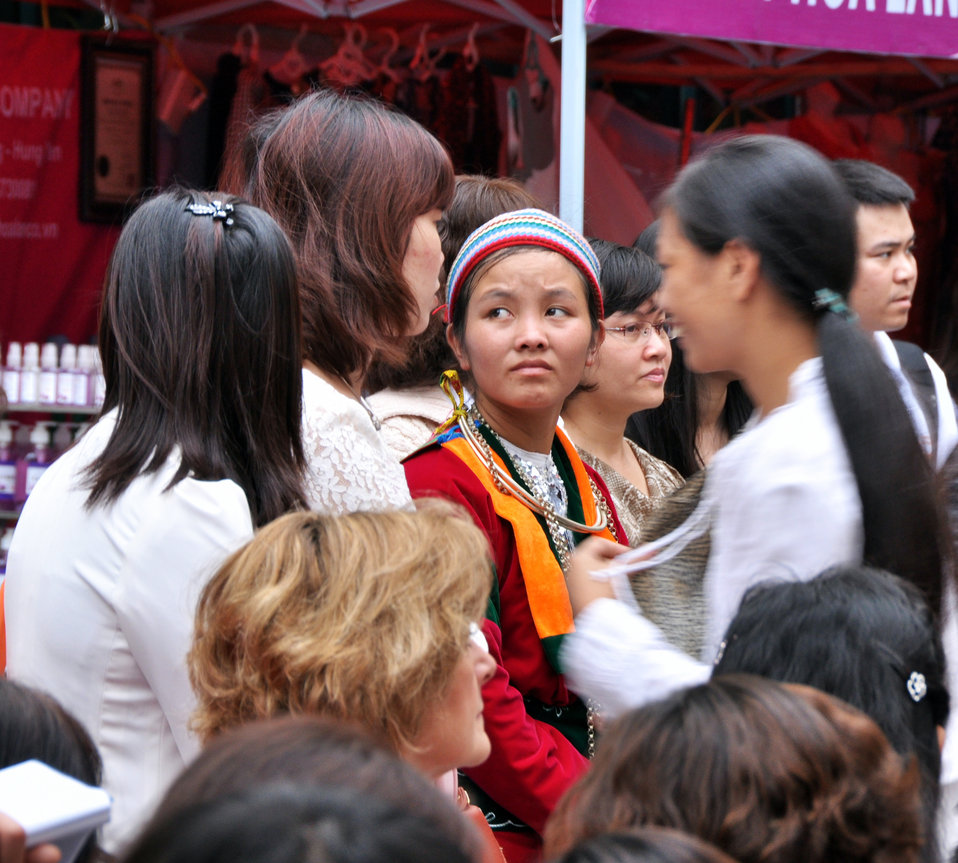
Vietnam Women Innovation Day 2013

Hanoi, October 1, 2013.